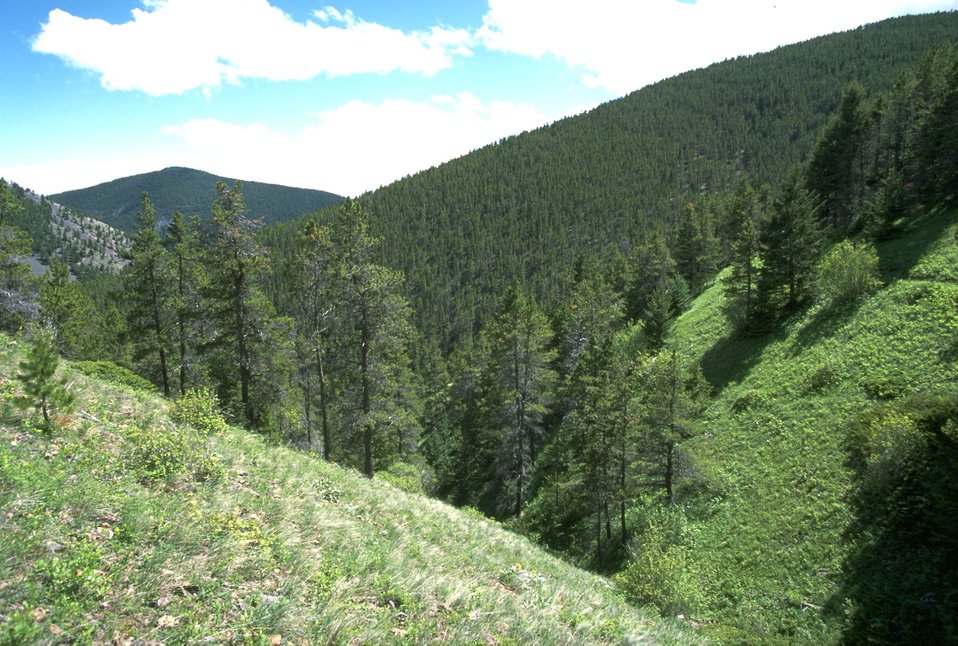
Forested and grassy hillsides in the Judith Mountains